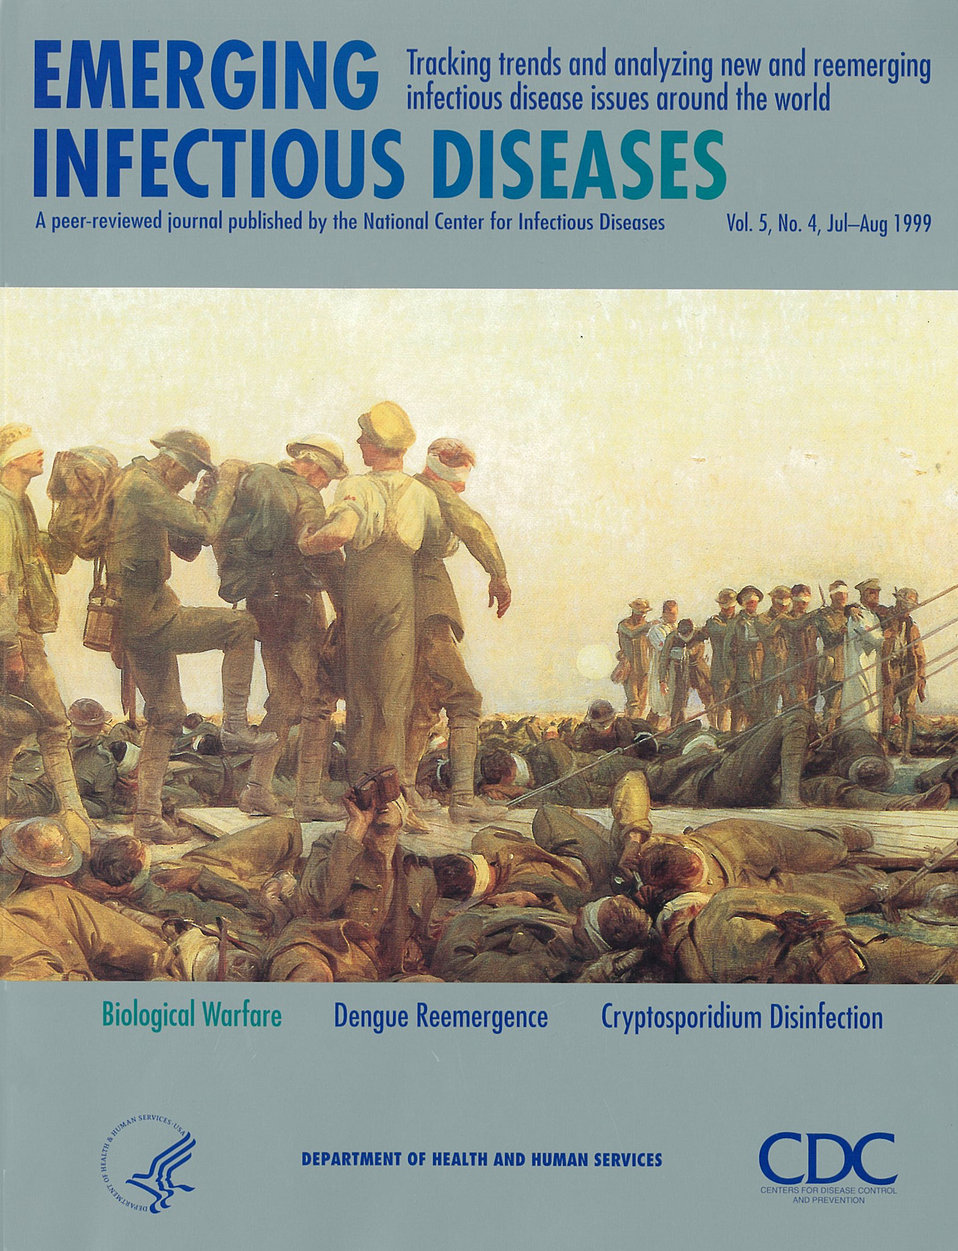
Emerging Infectious Diseases (EID) cover artwork for Volume 5, Number 4, July-August 1999 issue.